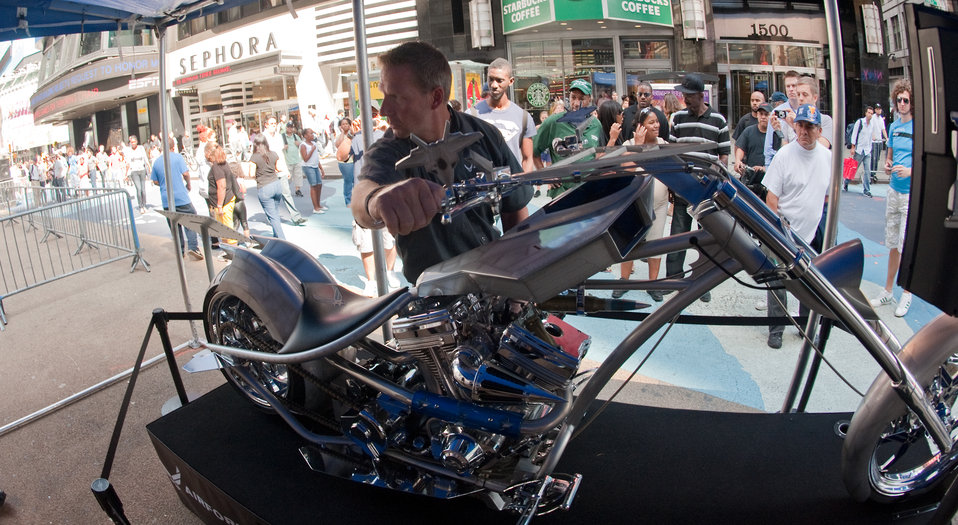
Air Force Week Now Showing in Times Square

Rick Thurman checks behind the Air Force Chopper before he gives the motor some gas, sending a thunderous noise into Times Square Aug. 26, 2010, during Air Force Week New York City.